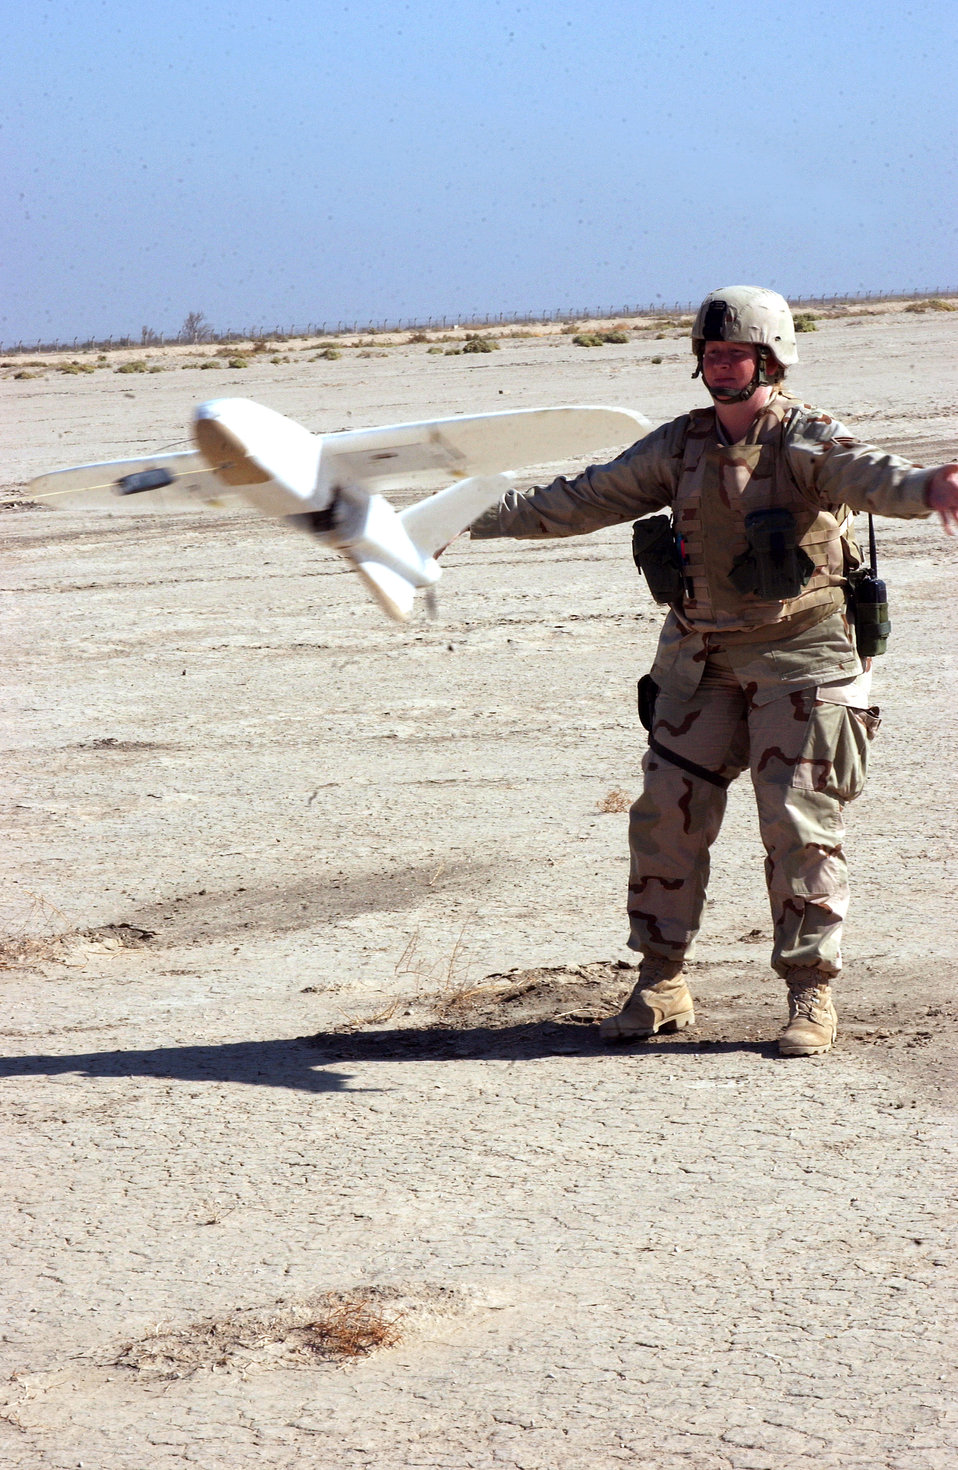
Mini-UAVs

ALI BASE, Iraq (AFPN) -- Senior Airman JoAnn Bonzi releases a miniature unmanned aerial vehicle. The UAV is tied to a bungee cord stretched between the mission